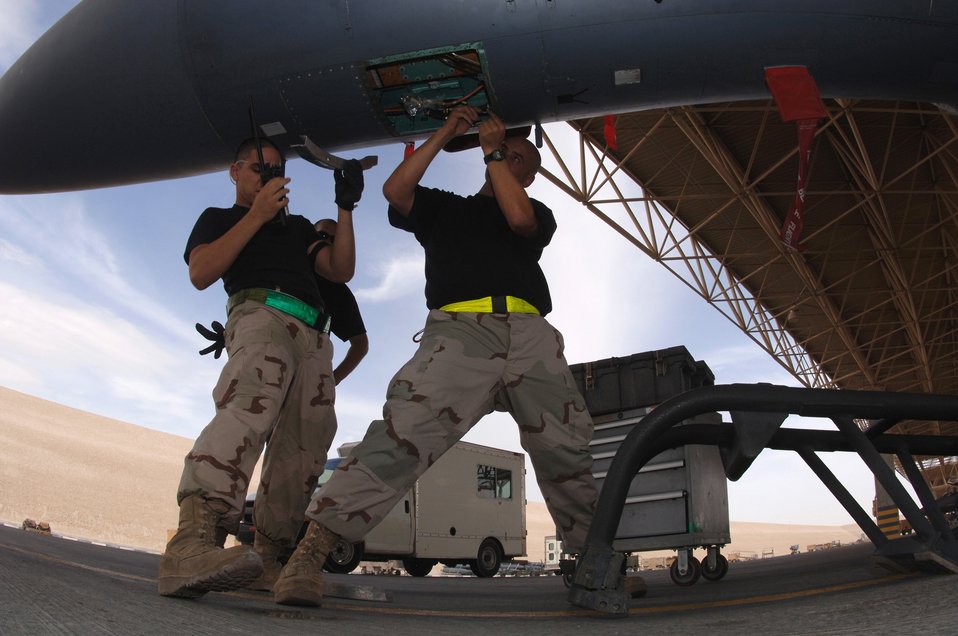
Deployed F-15s

Airmen with the 379th Expeditionary Maintenance Squadron work on an F-15E Strike Eagle at a forward-deployed location in Southwest Asia, on Wednesday, April 5, 2006. The F-15E is a dual-role fighter designed to perform air-to-air and air-to-ground missions. It is deployed from Seymour Johnson Air Force Base, N.C.